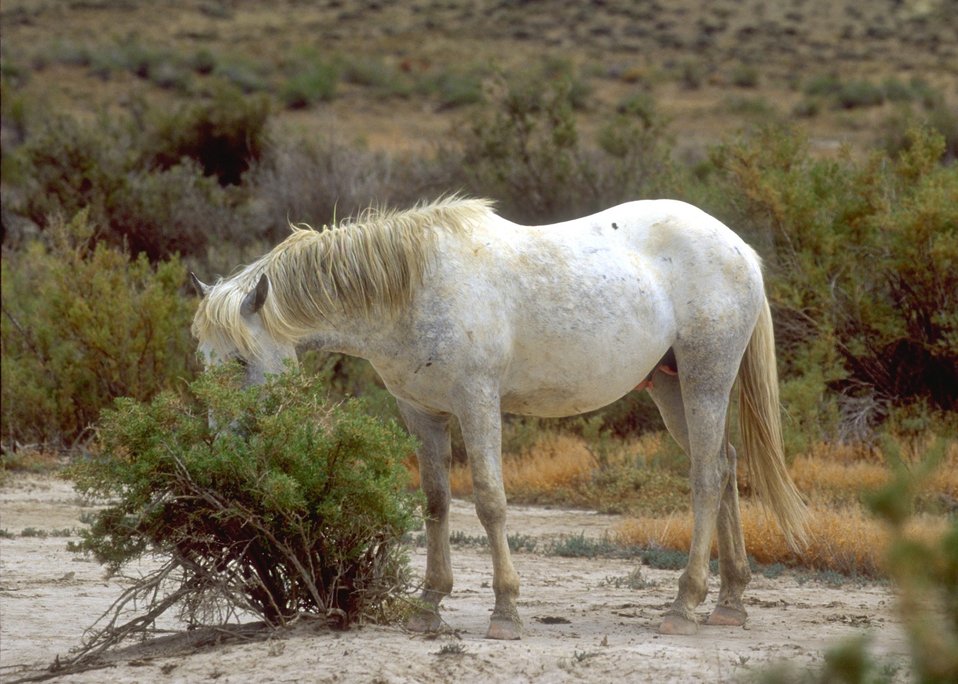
Wild horses, Rock Springs Field Office.